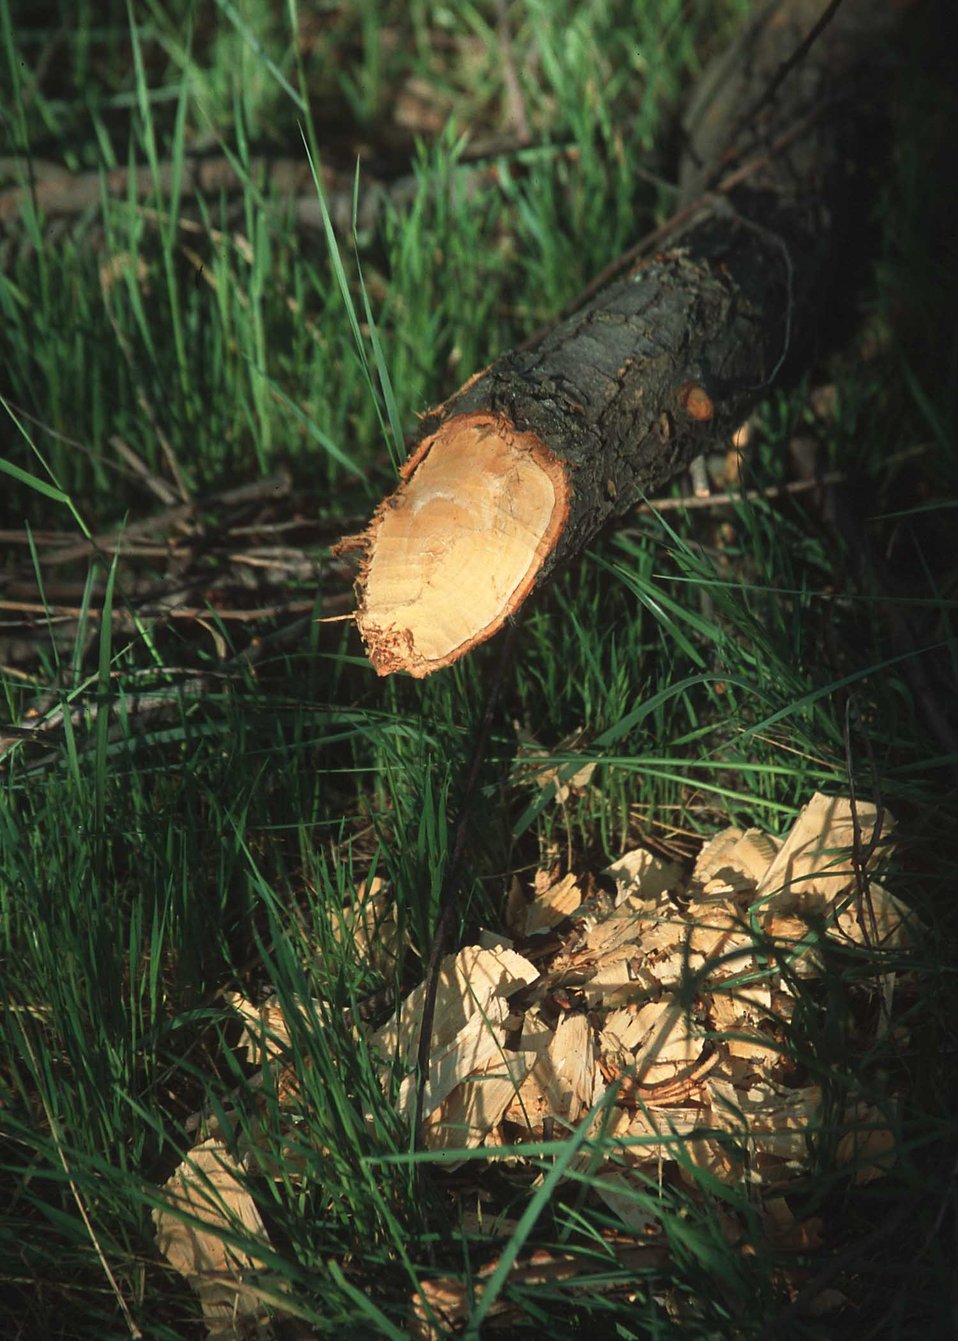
Evidence of wildlife in habitat area.